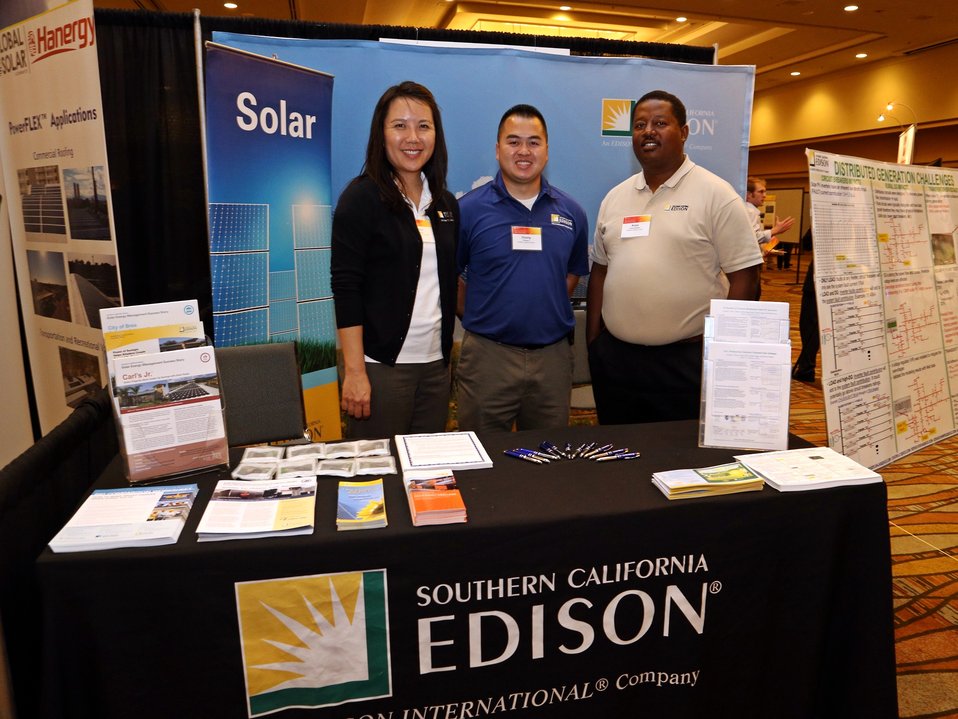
Tech Forum 5

Members of Southern California Edison at their booth.